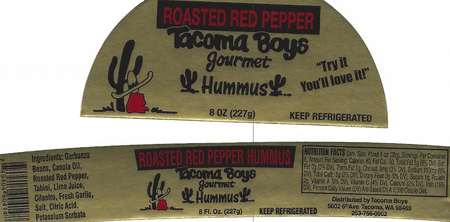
RECALLED – Hummus

July 16, 2013 – Product Recall – Hagee Foods Inc. dba Penny's Salsa Inc. Recalls Hummus Products Because of Possible Health Risk.